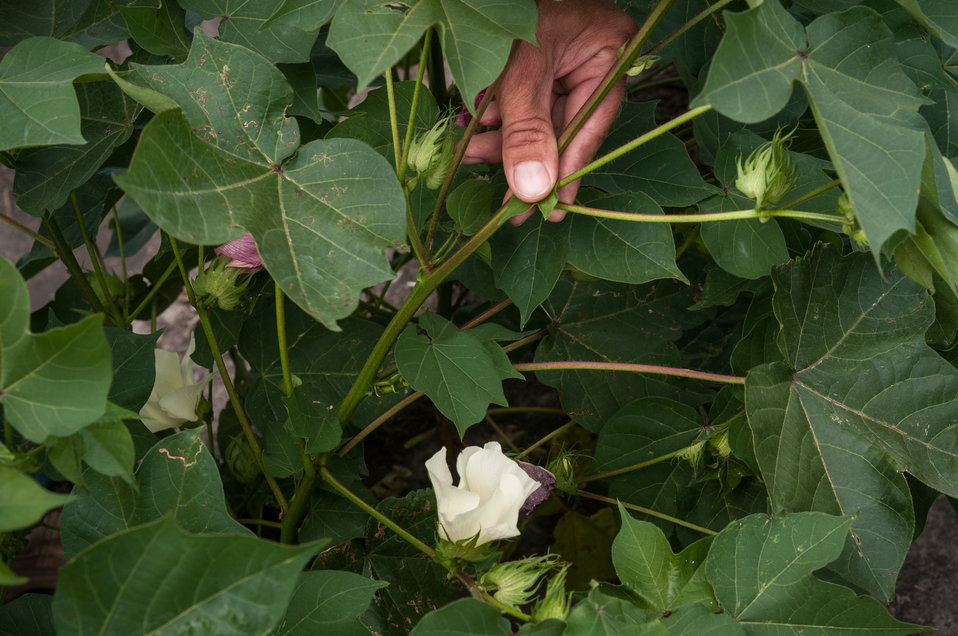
Michael Popp (pronounced Pope) shows cotton plants at various stages of development at Popp Farms 05 El Campo, TX on Jun. 20, 2013. Michael is a junior partner in the 2,400-acre operation, which grows cotton and milo (grain sorghum). The cotton flower starts as a square bud, then a white flower blossoms, turning red, then falls off leaving the boll to grow and eventually opens to reveal the cotton locks, ready to be harvested and processed in a cotton gin. Flowers first occur at the bottom and mature upwards along the plant. The farms are part of the United Agricultural Cooperative, Incorporated.